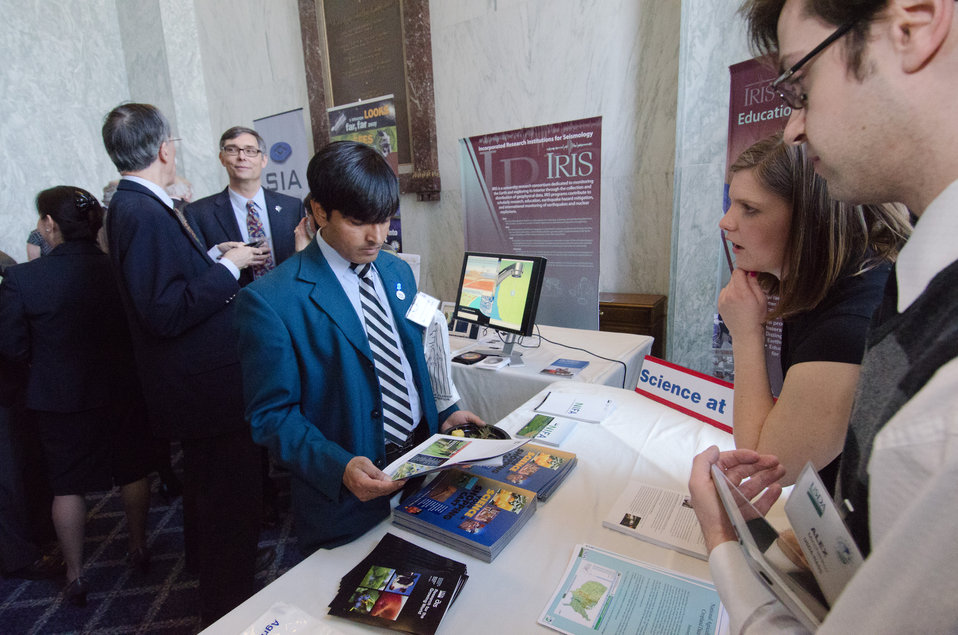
Florida International University’s M. Shadab Siddiqui, looks over information at the U.S. Department of Agriculture’s (USDA) National Agricultural Statistics Service’s (NASS) display. Alex Minchenkov (right) and National Institute of Food and Agriculture's Alice Eckert (second from right), provided information during Congressional Visits Day at the Rayburn House Office Building in Washington, DC, on Wednesday, April 6, 2011. The event allows U.S. representatives, staff and Capitol Hill visitors the opportunity to learn about the REE mission and impact on America. REEs leadership responsibility is to advance scientific knowledge related to agriculture through research, extension, and education.